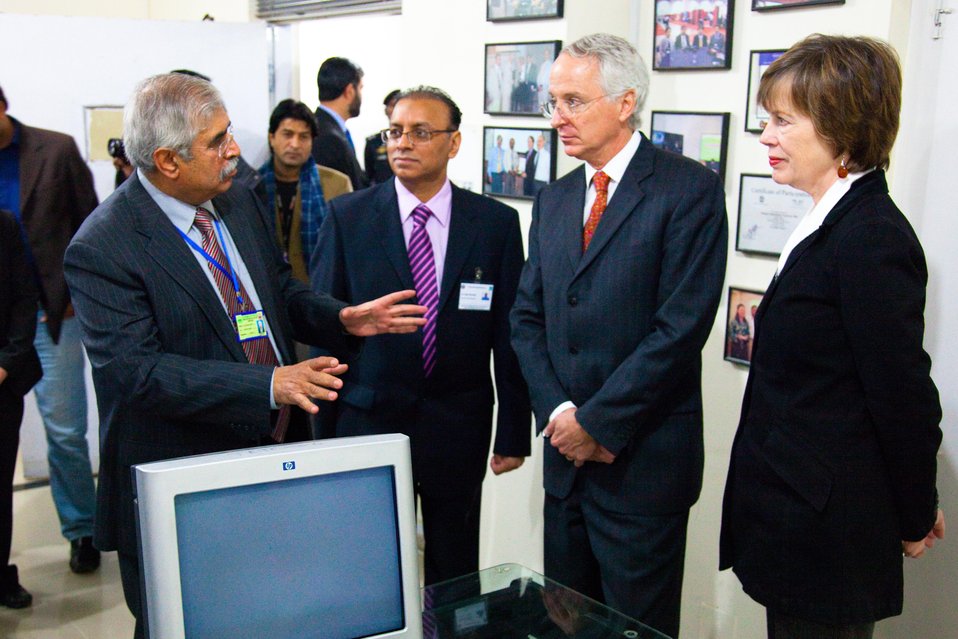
Dr Asif Zafar Malik, Project Dir Telemedicine/training, in a conversation with Ambassador Munter and his wife Dr Marilyn Wyatt at Holy Family Hospital in Rawalpindi.

Rawalpindi, January 5, 2012 – Ambassador Cameron Munter and his wife Dr. Marilyn Wyatt sitting with Dr. Asif Zafar Malik, Project Director Telemedicine/training and other officials.